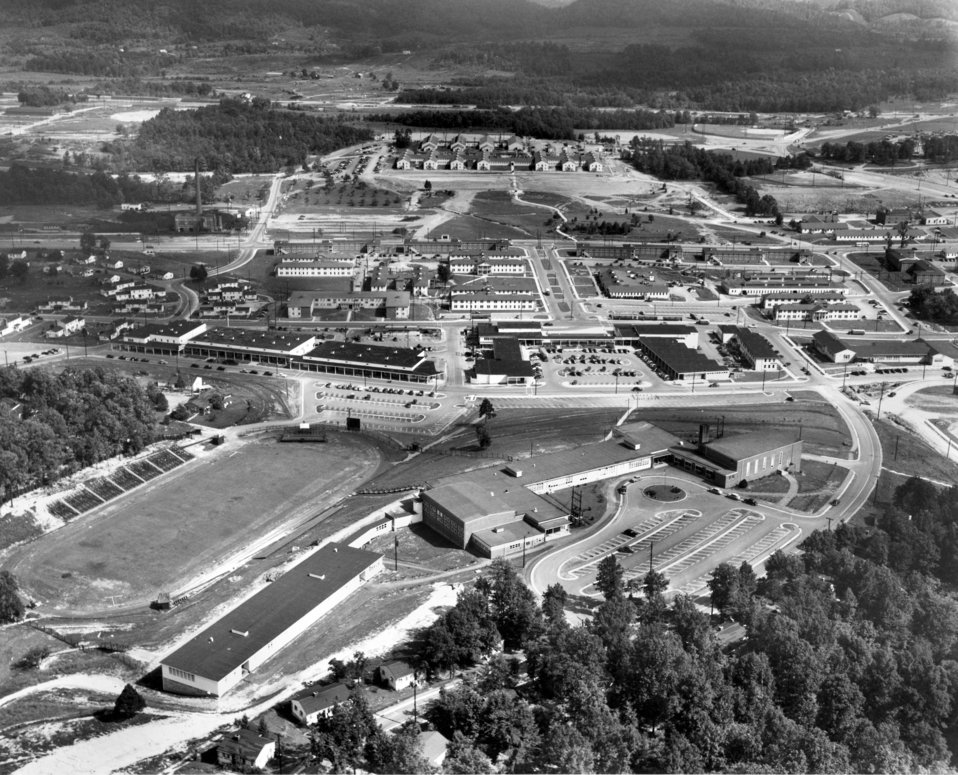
Air View of Jackson Square and High School Looking South Oak Ridge

5234-DOE photo by Ed Westcott Oak Ridge Tennessee 1948